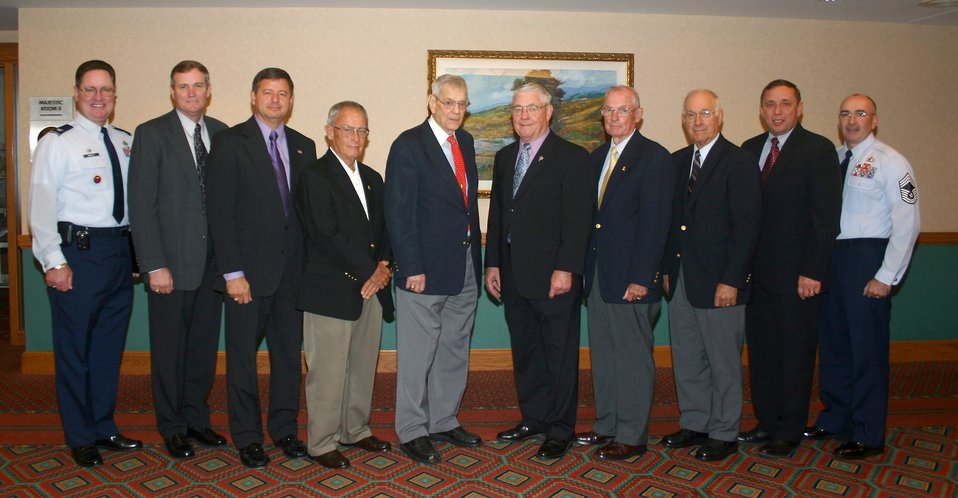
Chief Pfingston loses fight with cancer

Retired Chief Master Sgt. Gary Pfingston, the 10th chief master sergeant of the Air Force, is shown fourth from left at an Air Force Sergeants Association conference in Dallas in August 2005. Chief Pfingston died of cancer June 23 in San Antonio.